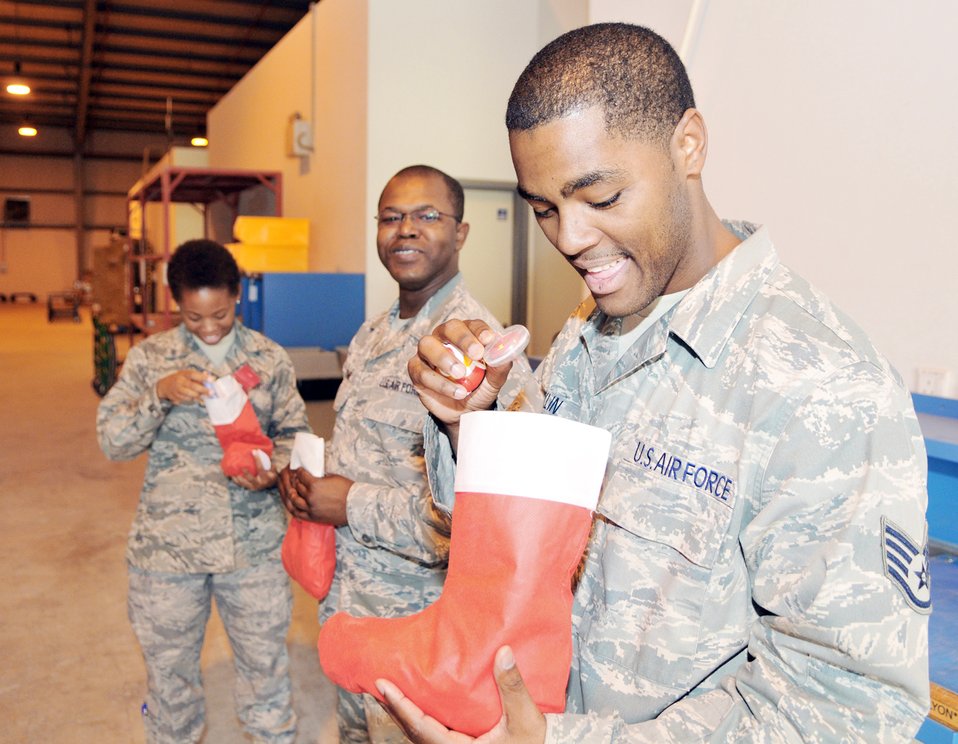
I must have been good!

Airmen deployed to an air base in Southwest Asia open stockings full of gifts delivered by Col. Chad Manske, 100th Air Refueling Wing commander and Chaplain (Lt. Col.) Frederick Viccellio visiting from Royal Air Force Mildenhall, England, Dec. 18, 2009.